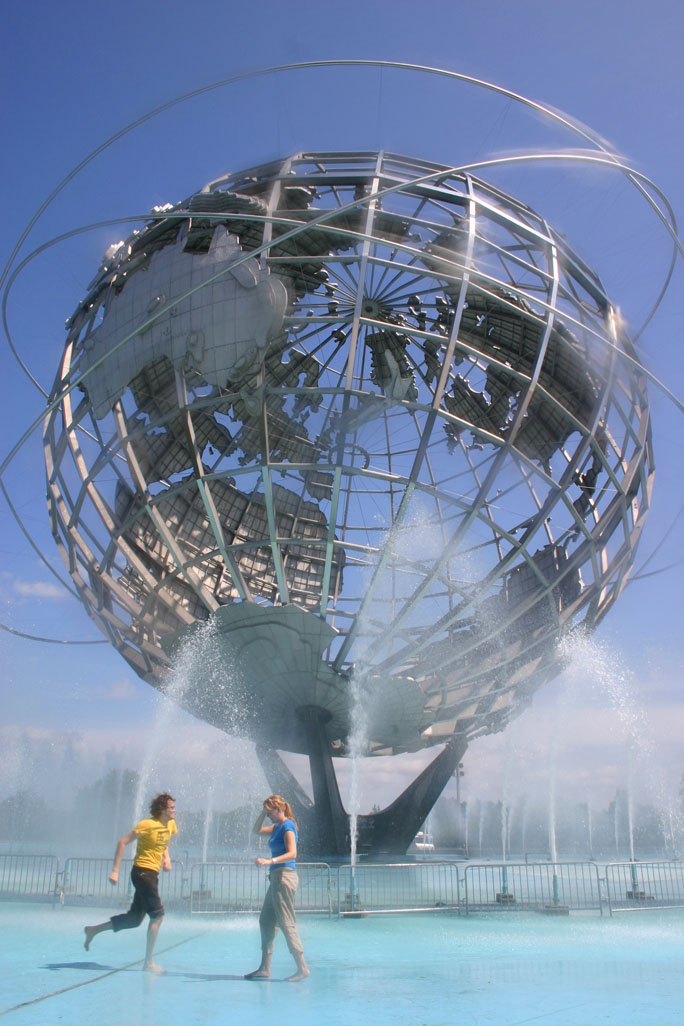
Uploaded by request of Du He Ping.